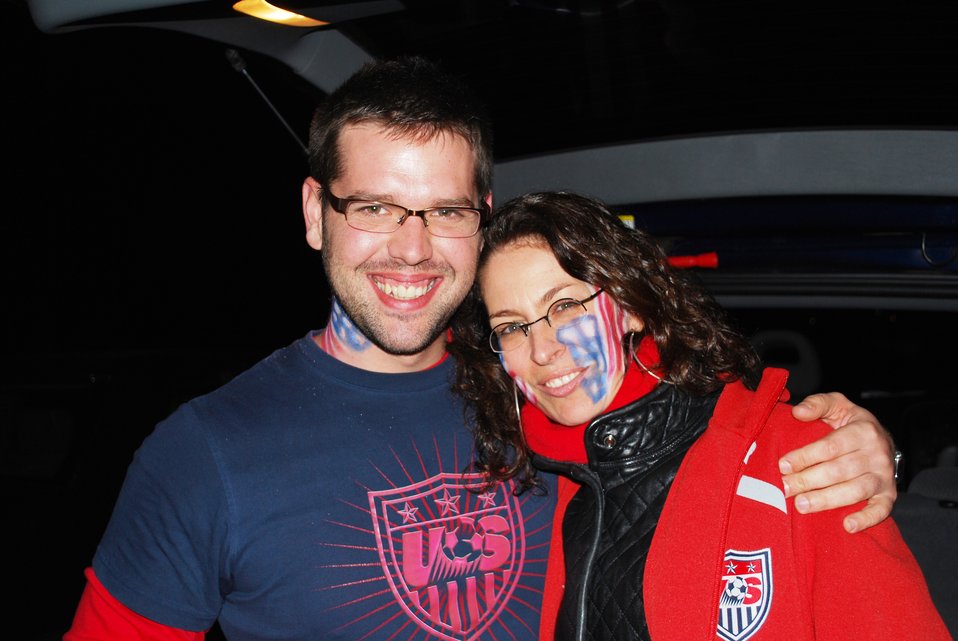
U.S. Embassy Pretoria Staff Display Their Red, White, and Blue

U.S. Embassy Pretoria staff members proudly display their red, white, and blue at the U.S. vs. England World Cup soccer match at the Royal Bafokeng stadium in Rustenburg, South Africa, on June 12, 2010.